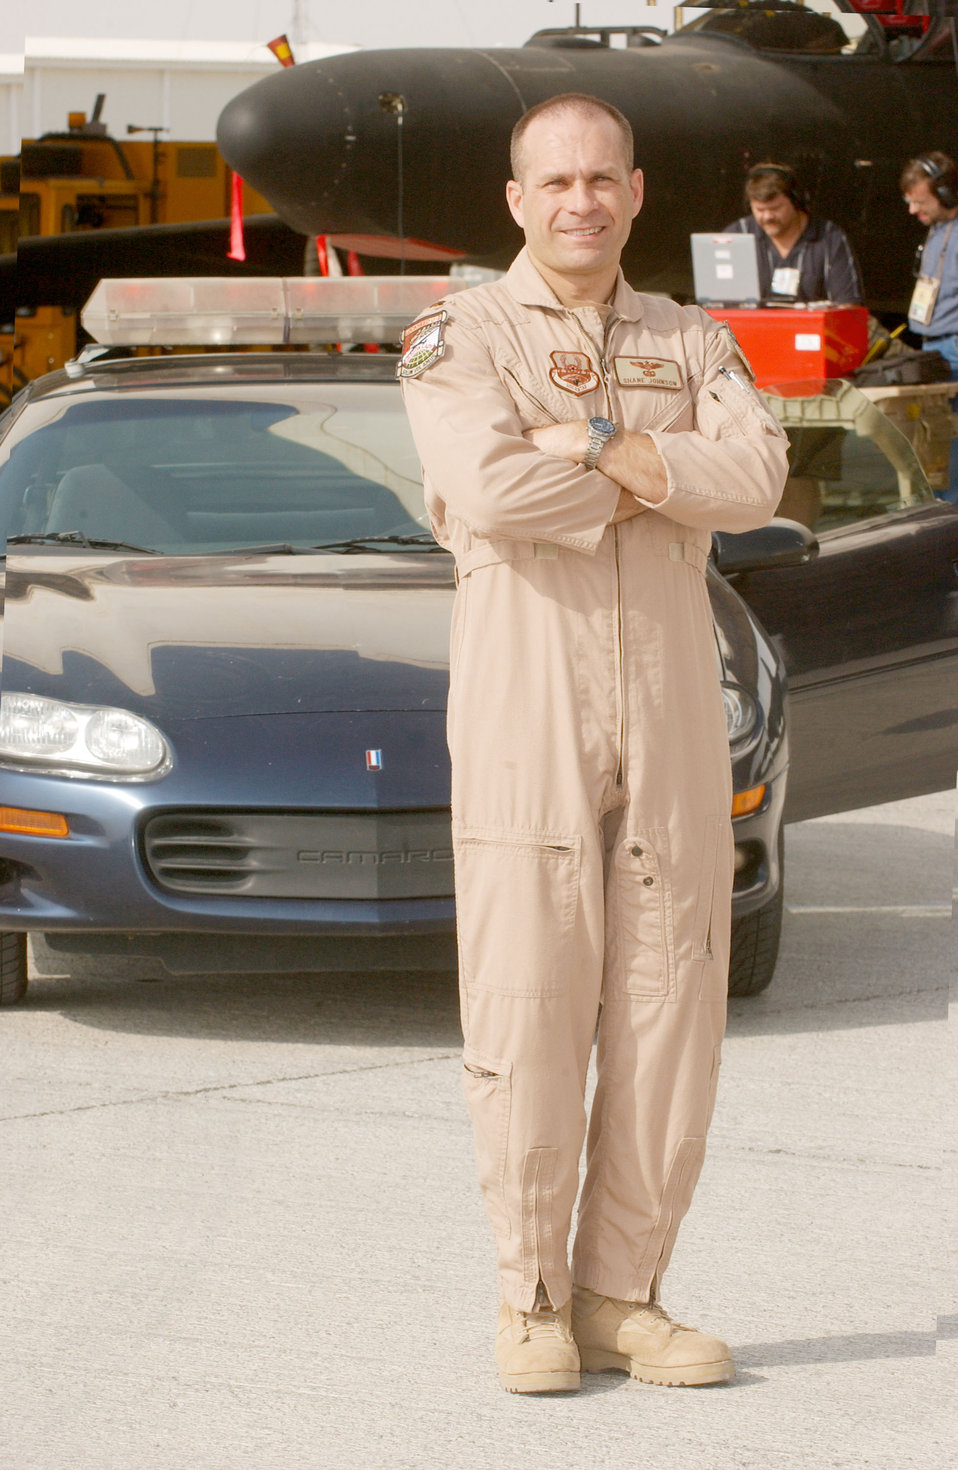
Chasing a Dragon Lady

SOUTHWEST ASIA -- Maj. Shane Johnson stands in front of one of the Chevrolet Camaro Z-28s used to chase a U-2 Dragon Lady during takeoffs and landings. Because of visibility limitations when on the ground, U-2 pilots rely on the driver in the car to provide information during takeoffs and landings.